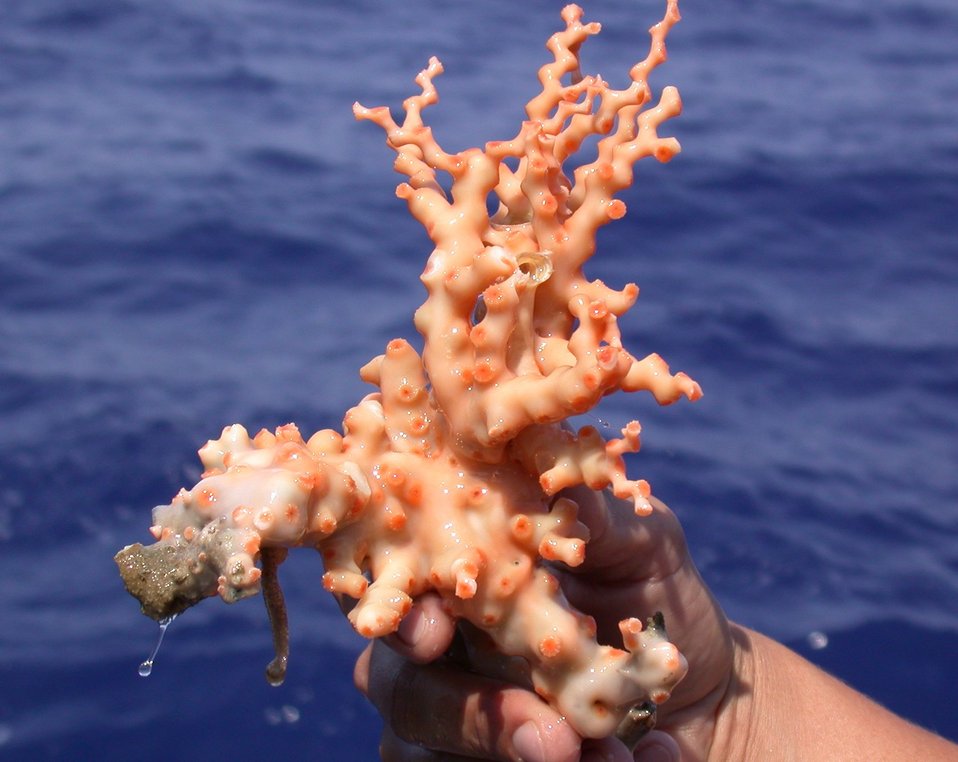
This beautiful pale orange coral was collected at the Lophelia coral banks. Very different from the surrounding pale white Lophelia, The members of the Islands in the Stream 2002 expedition had never seen this type of coral before among the Lophelia during their dives.